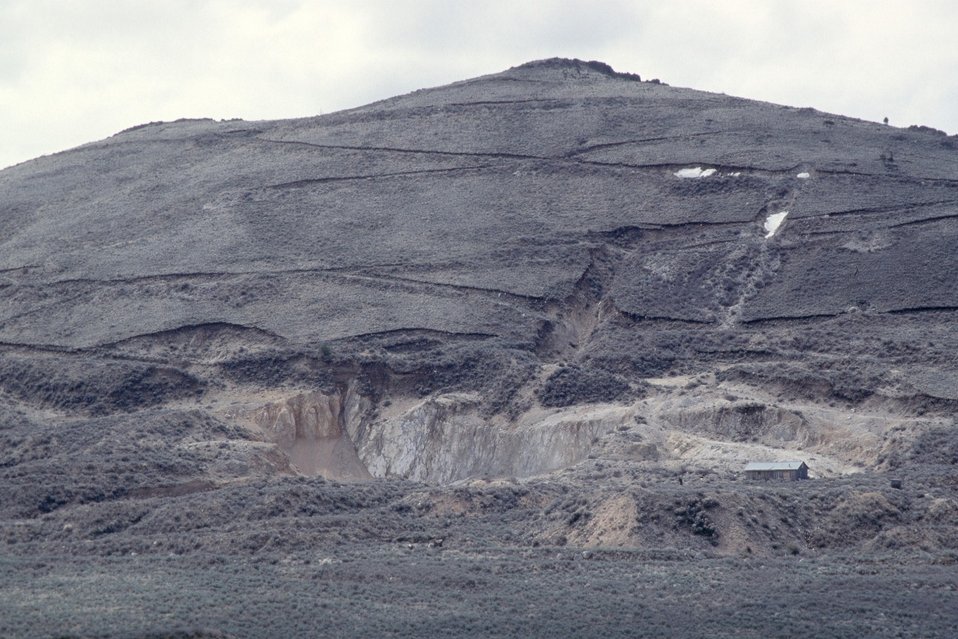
AML Glass Buttes, bunkhouse area, Burns District Hillside scarred by mining activity. This was probably the site of an adit excavated in approximately 1957, and then that adit was daylighted by dozer work in 1967 to 1970.